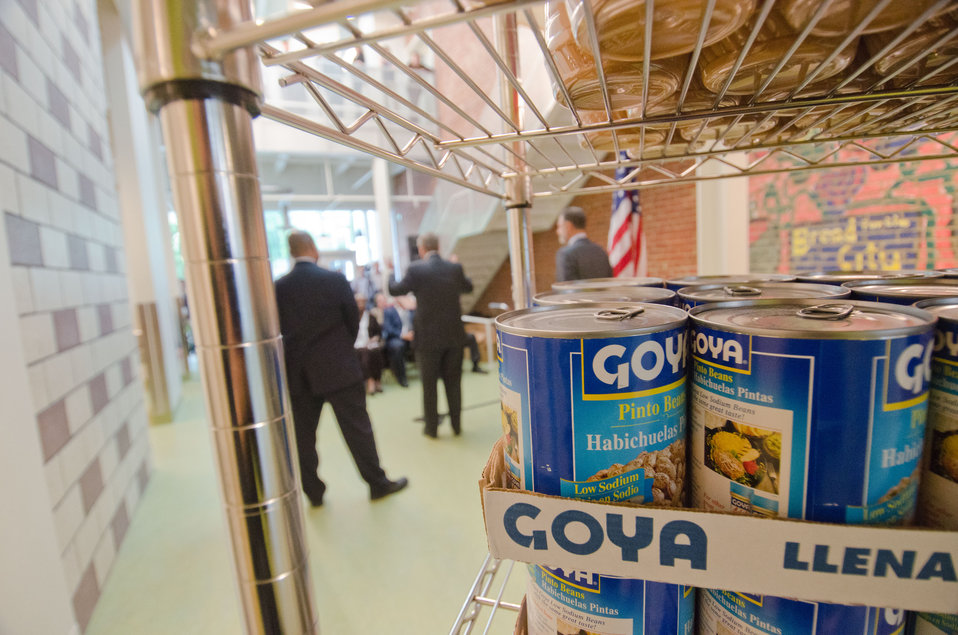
Agriculture Secretary Tom Vilsack (center), Corporation for National and Community Service CEO Patrick Corvington and Bread for the City President George Jones announced on Thursday April 29, 20ll in Washington, DC, each of their organization's are commimited to ending childhood hunger. Secretary Vilsack presented USDA's resources to champion the end of hunger and create innovative partnerships to address hunger, especially among children. Vilsack announced that USDA has made available to individuals, groups and communities the tools and technical assistants to become champions themselves in ending childhood hunger. He shared the web address www.fns.usda.gov/ech, where people can participate in an online commitment for that cause and identified actions that can be taken. When a person registers as a Stakeholder, they, their group or community can be kept informed and have input about ending childhood hunger. A follow-on link to www.serve.gov can assist a person in finding volunteer opportunities in their area; register an unlisted program; share a story about a volunteer project or personal experience; and help get the word out about United We Serve.